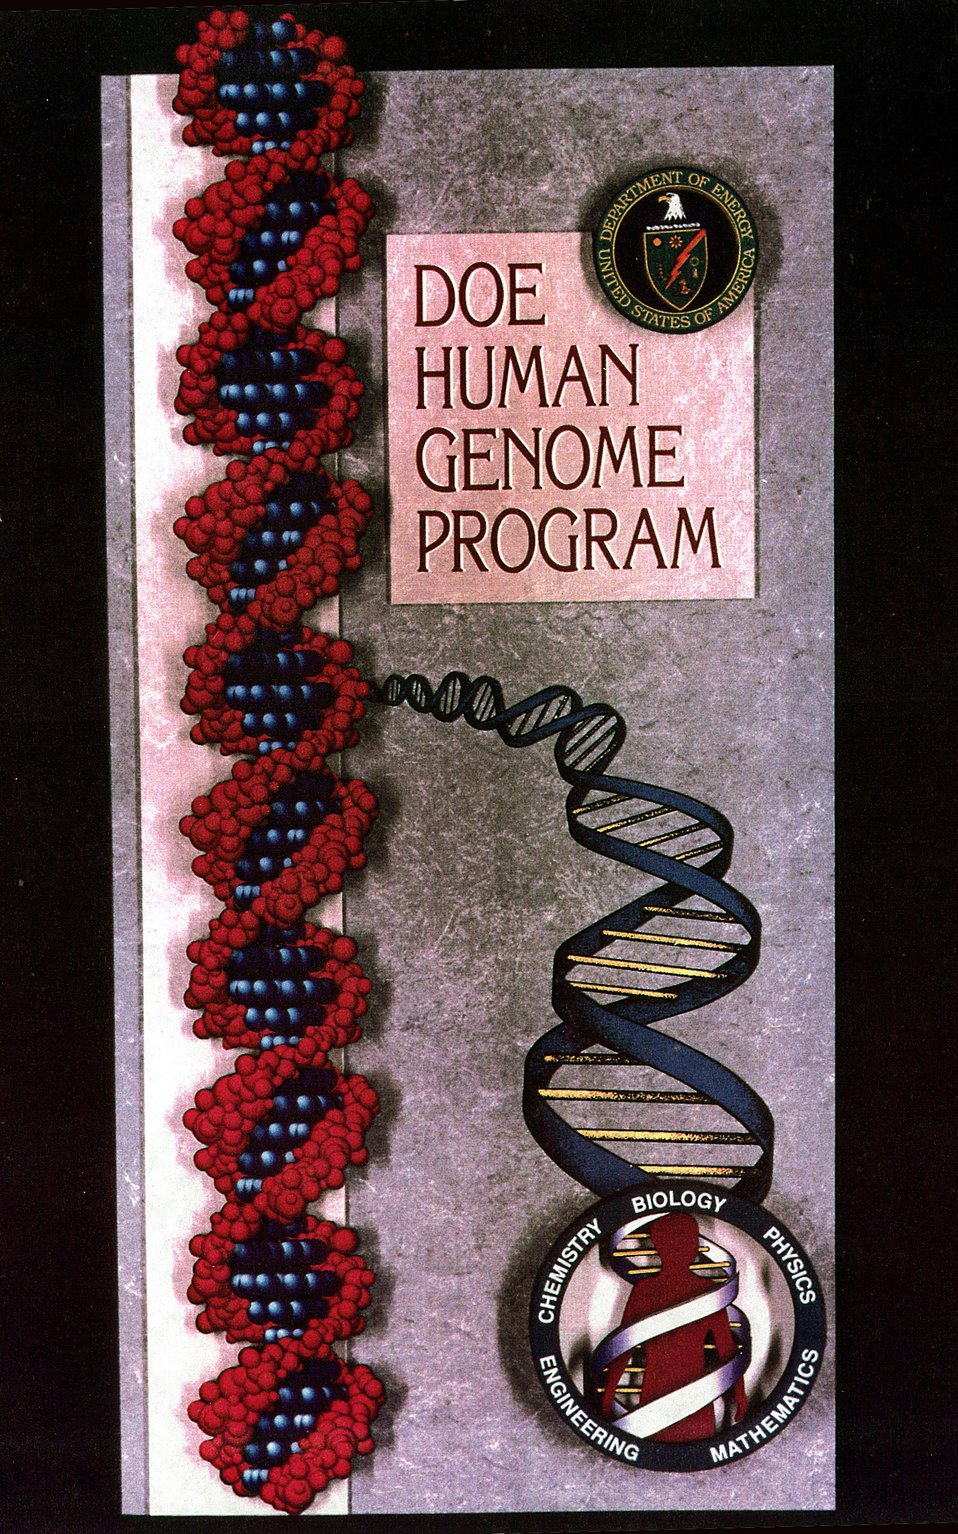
DOE Human Genome Program.